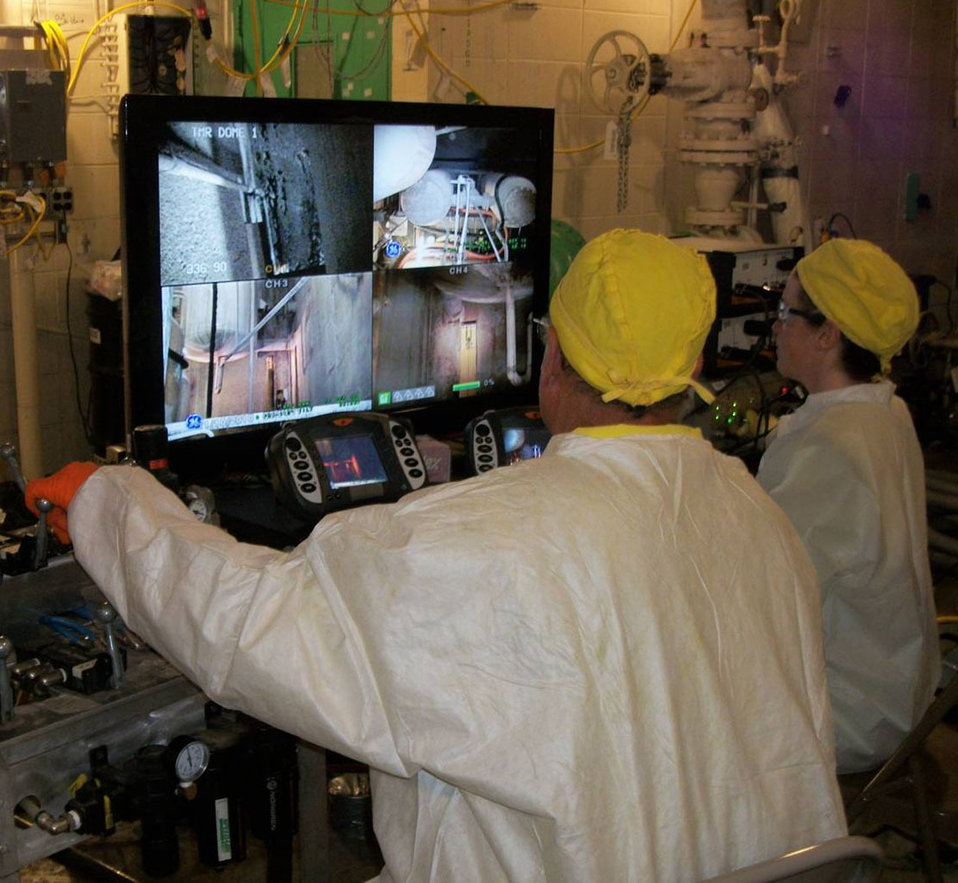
Scabbling Work Begins in the Off Gas Cell

Remotely -deployed scabbling equipment is chipping away at contaminated concrete in the Off Gas Cell (OGC) in the Main Plant Process Building at the West Valley Demonstration Project.